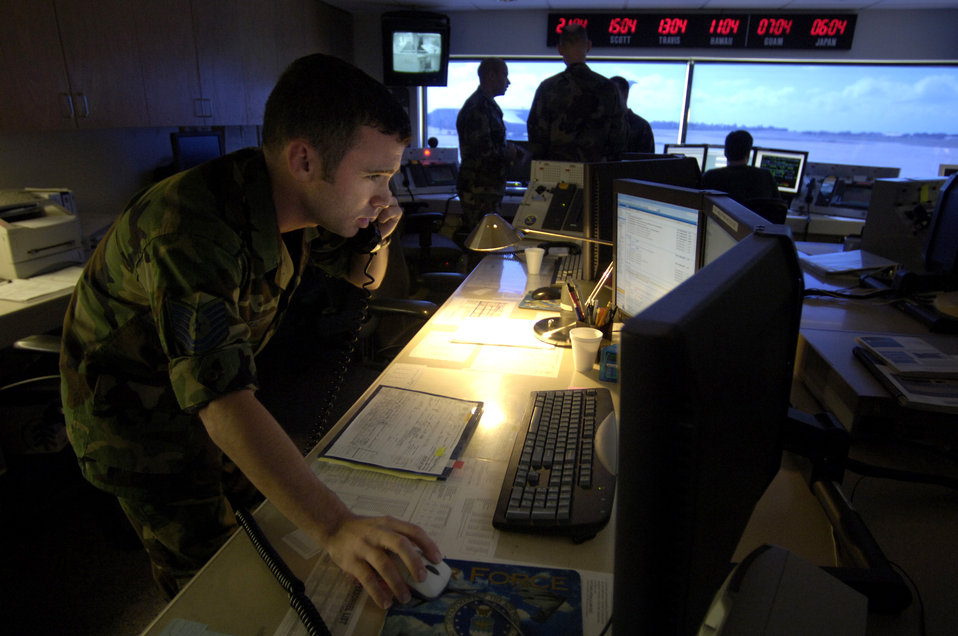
Boarding time

HICKAM AIR FORCE BASE, Hawaii (AFPN) -- Staff Sgt. Joseph Brady alerts aircrews for their flight from the Air Mobility Command Center here. It is the nerve center for coordinating all uploads of cargo and passengers. It also accommodates and alerts aircrews. Sergeant Brady is with the 735th Air Mobility Squadron.